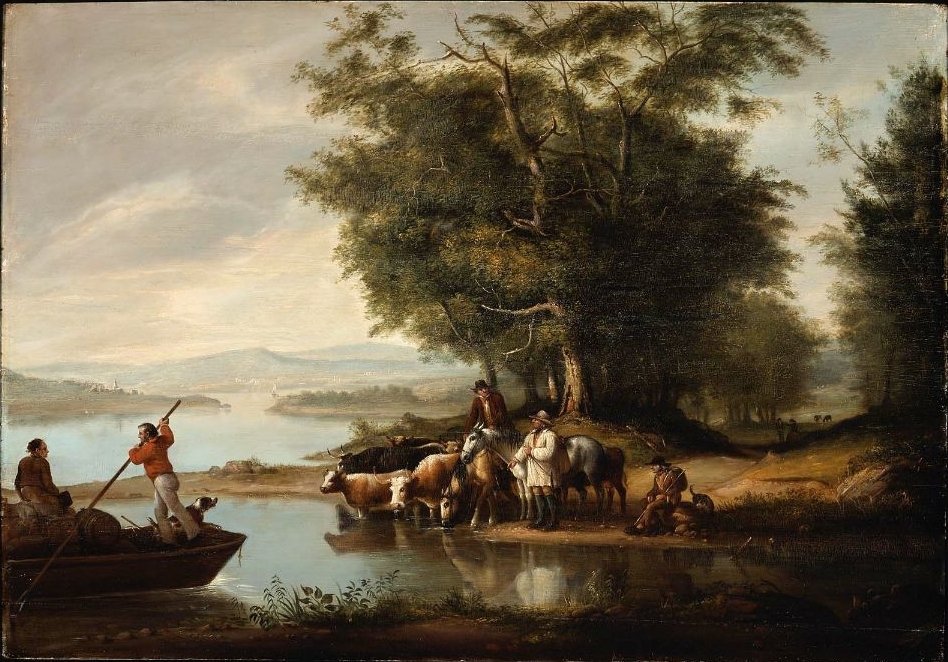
Alvan Fisher - Landscape with Cows